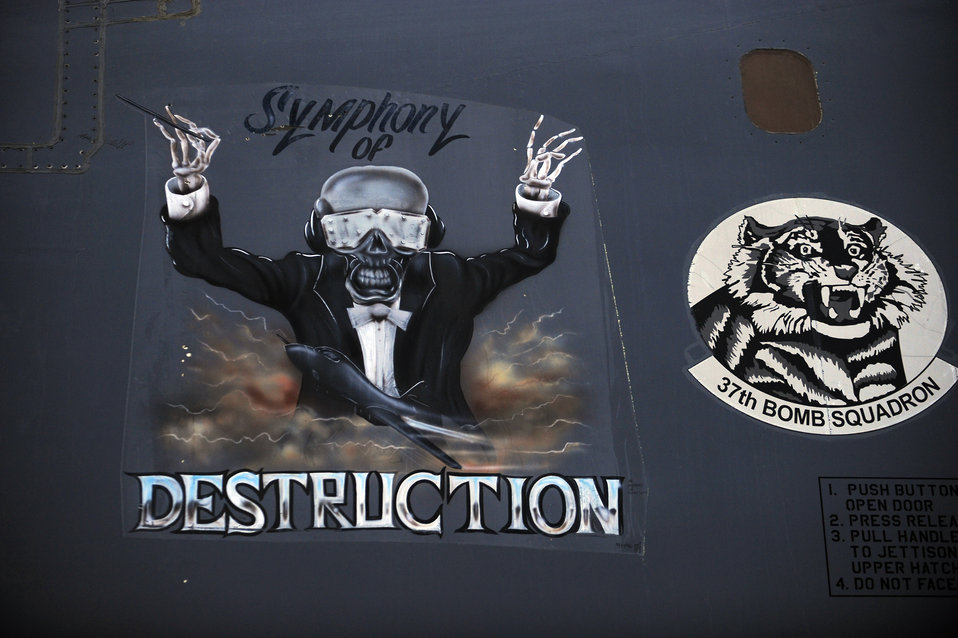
Mural and unit patch on a B-1B Lancer

A mural and unit patch on a B-1B Lancer assigned to the 37th Expeditionary Bomb Squadron depicts their macot, a tiger. The photo was taken in Southwest Asia Jan. 23, 2010. The 37th Expeditionary Bomb Squadron is deployed from Ellsworth Air Force Base, S.D.